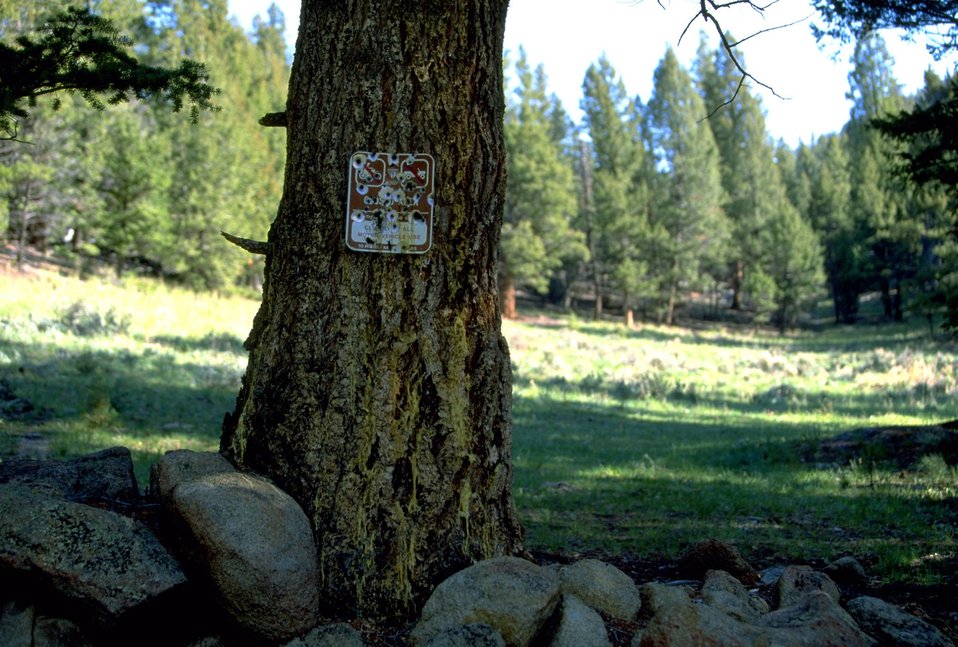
Regulation Sign destroyed by bullet holes on tree trunk